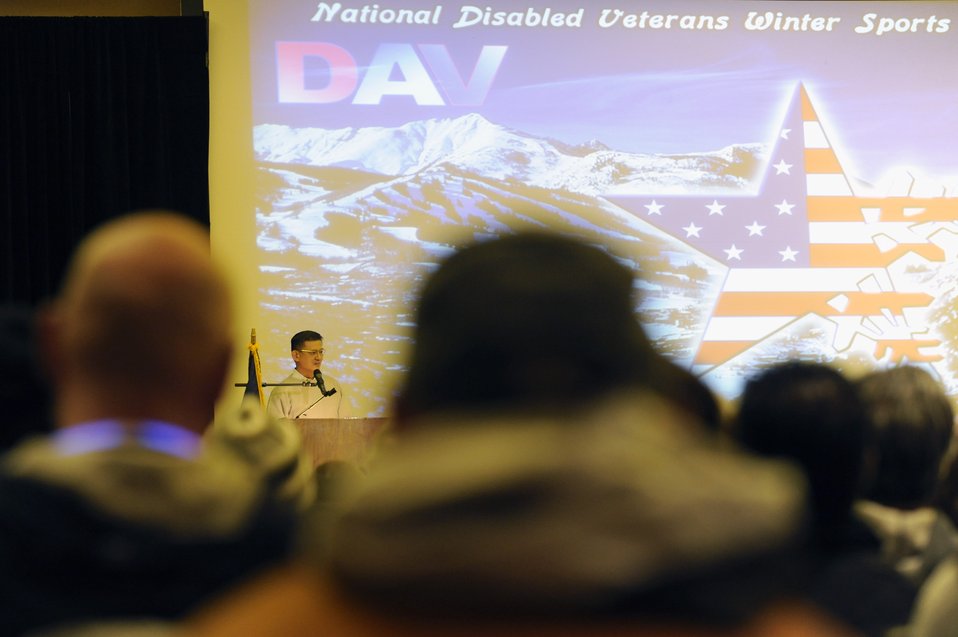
Winter rehabilitation clinic shows veterans potential

Secretary of Veterans Affairs Eric K. Shinseki gave opening remarks during the opening ceremony inside The Silver Tree Hotel March 29 for the 23rd National Disabled American Veterans Winter Sports Clinic in Snowmass Village, Colo. The event is sponsored by the Department of Veterans Affairs and Disabled American Veterans.